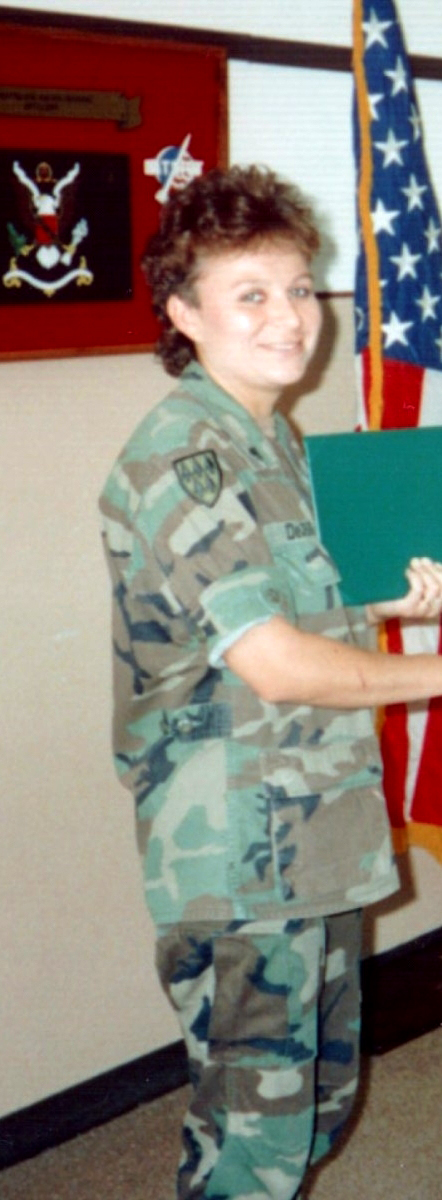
Leana DeJesus, a Human Resource Specialist in Region 3, served 13 months in the Army during the Gulf War during Operations Desert Shield and Desert Storm.